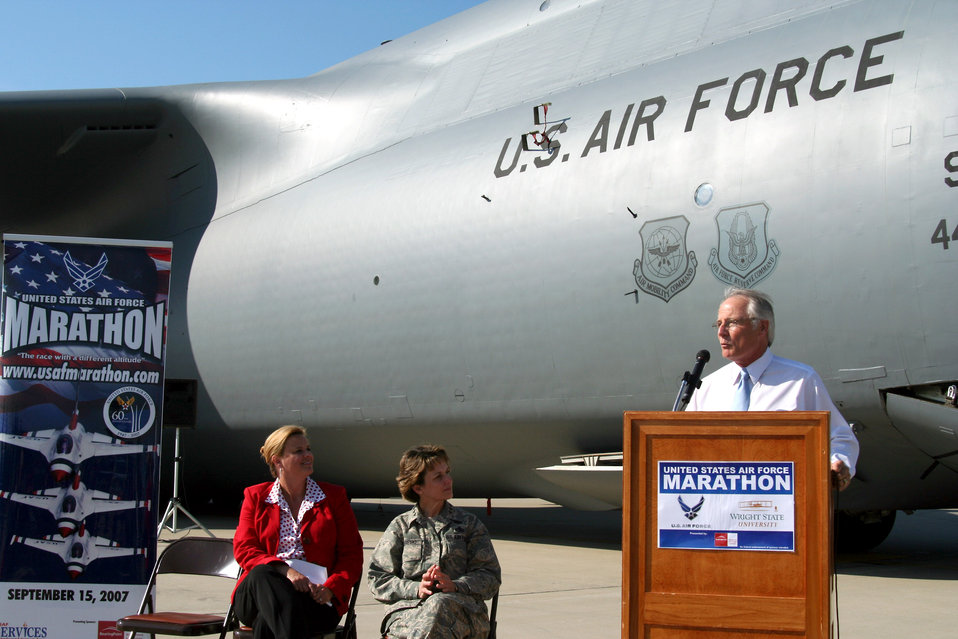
Air Force, academia partner in Air Force Marathon

With the U.S. Air Force Marathon just three months away, Air Force and Wright State University officials conducted a press conference June 13 on the flightline of Wright-Patterson Air Force Base, Ohio. Dr. David Hopkins, president of Wright State University, highlighted details of this year's race along with Molly Loudon (left), marathon director, and Lt. Gen. Terry Gabreski, vice commander of Air Force Materiel Command.